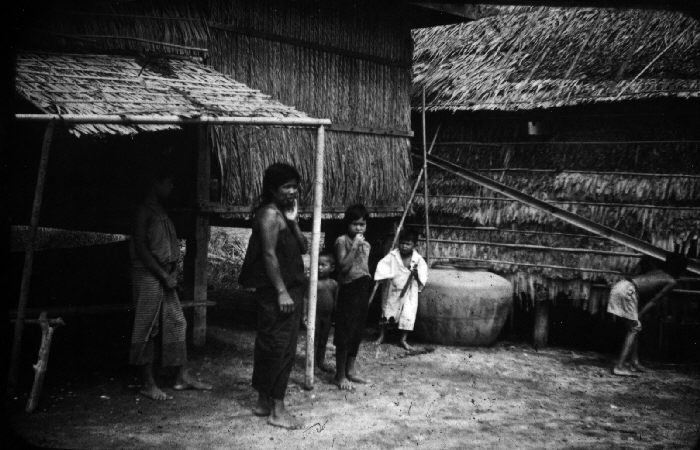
Clinical Cholera